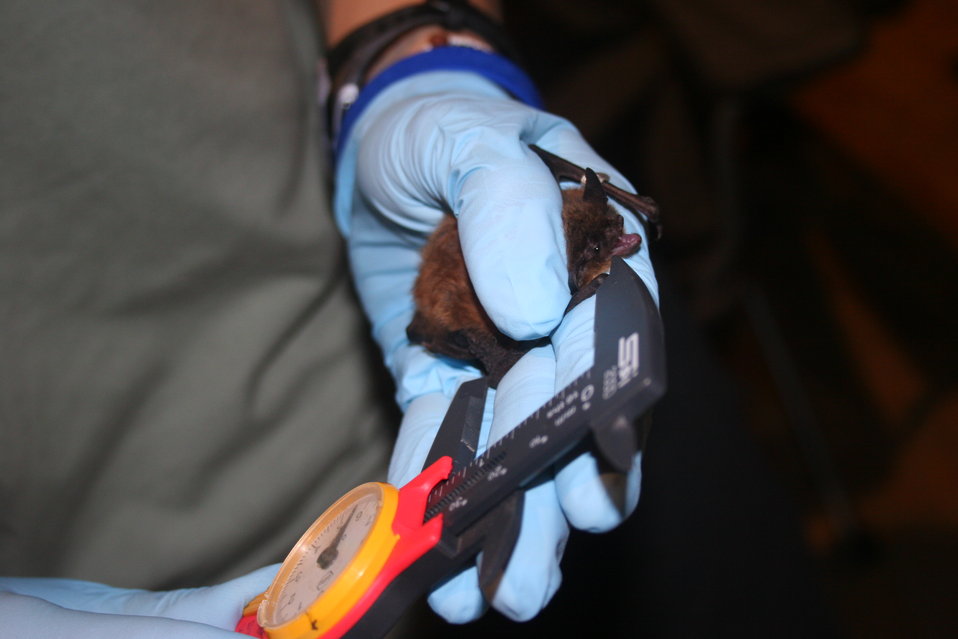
Measuring forearm

Biologist measures forearm of little brown bat.